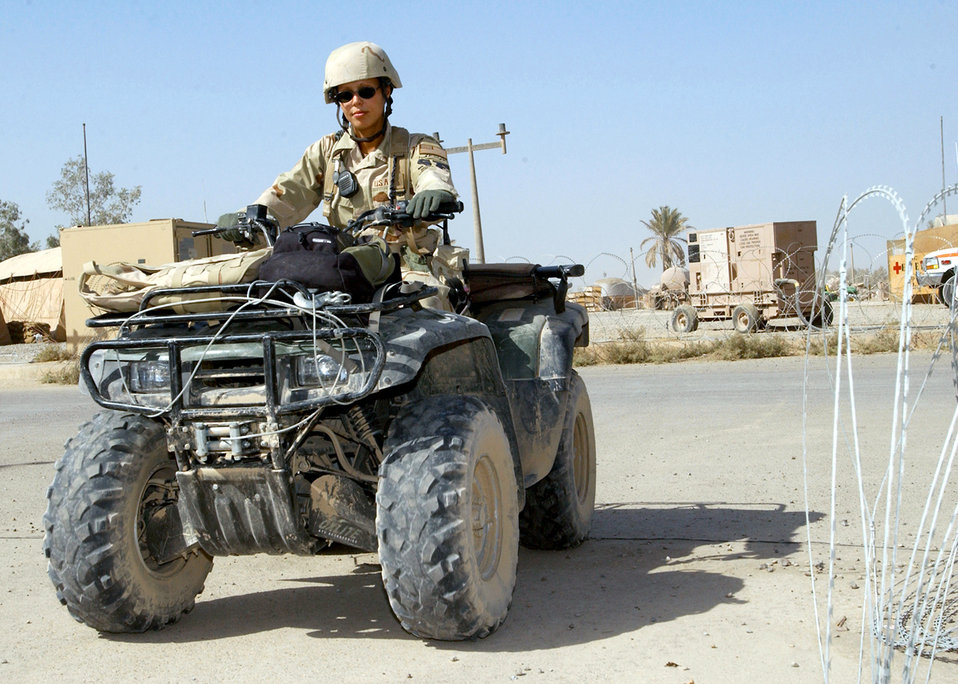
On patrol

BAGHDAD INTERNATIONAL AIRPORT, Iraq -- Staff Sgt. Lorie Holis drives to a security post here. She is deployed from Grand Forks Air Force Base, N.D., with the 447th Expeditionary Security Forces Squadron.